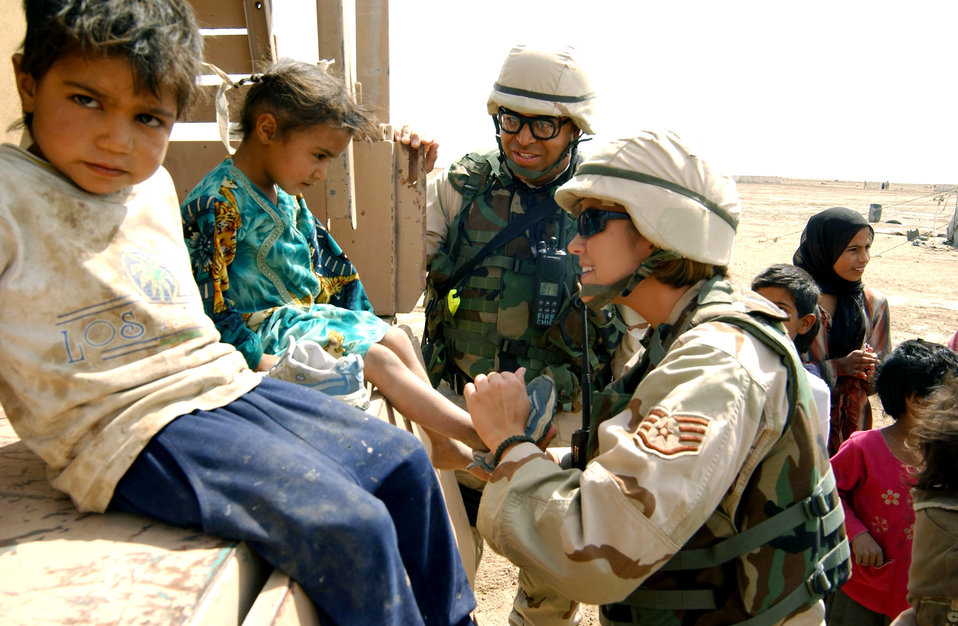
Airmen, Soldiers reach out to local Bedouins

NEAR TALLIL AIR BASE, Iraq -- Staff Sgt. Erica Clark talks with a young local Bedouin girl as she places a shoe on her foot. Sergeant Clark and Senior Master Sgt. Robert Appling (back) visited local Bedouins as part of an outreach program. Sergeant Clark is assigned to the 407th Expeditionary Security Forces Squadron. Sergeant Appling is the fire chief assigned to the 407th Expeditionary Civil Engineer Squadron.